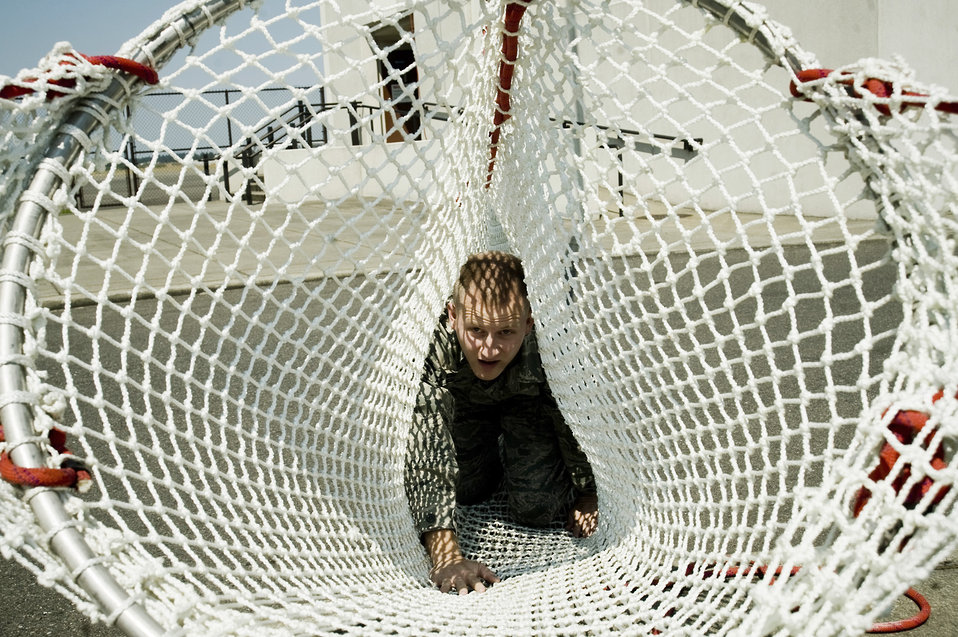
Air traffic controllers practice emergency exit procedures

Airman 1st Class Ryan Johnson emerges at the end of the Baker Life Chute following his first successful slide from the tower during evacuation training Aug. 3, 2010, at Joint Base Lewis-McChord, Wash. Airmen Johnson is with the 62nd Operations Support Squadron